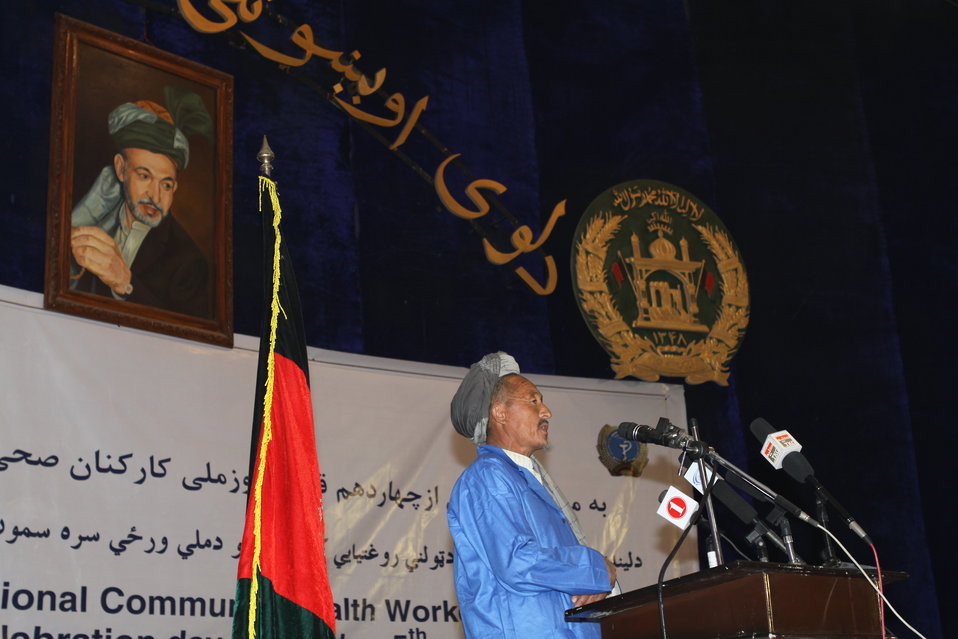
Community Health Workers Celebrated

Kabul, Afghanistan | December 5, 2010 — In support of the United Nations designated International Volunteer Day for Economic and Social Development, Afghanistan’s Ministry of Public Health celebrated its annual Community Health Worker Day today. Acting Minister of Public Health Dr. Suraya Dalil, USAID Senior Deputy Mission Director Robert Hellyer, other government officials, and international donors joined in recognizing the critical contribution of community health workers in Afghanistan and encouraging them to continue their voluntary support to their communities.
The event praised the contributions of the more than 22,000 volunteers throughout the country who deliver community level health-education, counseling, and services out of village health posts located in private homes. The Ministry of Public Health envisioned that community-based healthcare programs will actively encourage communities and families to adopt healthy lifestyles and behaviors, and provide families access to high quality and socially acceptable preventative medicine and life-saving services.
“We have 22,000 community health workers in Afghanistan that are able to implement the basic and standard medicines. They all have been trained through a job description,” said Minister Dalil. Addressing the health workers, she added, “I am proud and feel powerful that I have people like you.”
USAID-funded health projects collaborate closely with the Ministry of Public Health to improve the health and nutritional status of Afghans, provide quality primary healthcare, and promote healthy behaviors at the community and household-levels. USAID supported the training of more than 9,000 of the volunteer community health workers currently working in Afghanistan.
“On behalf of the American people, I congratulate the Community Health Workers for their diligence to gain the skills and knowledge necessary to serve their communities in this important role,” said USAID Senior Deputy Mission Director Hellyer. “USAID strongly supports community based health care and believes that quality community-based health services are essential to reaching Afghanistan’s Millennium Development Goals.”
To support the Basic Package of Health Services, USAID assisted in developing the community health worker training manual, helped train community health worker supervisors and master-trainers, facilitated in-service training, and produced and developed reporting tools, job aids, and education materials.